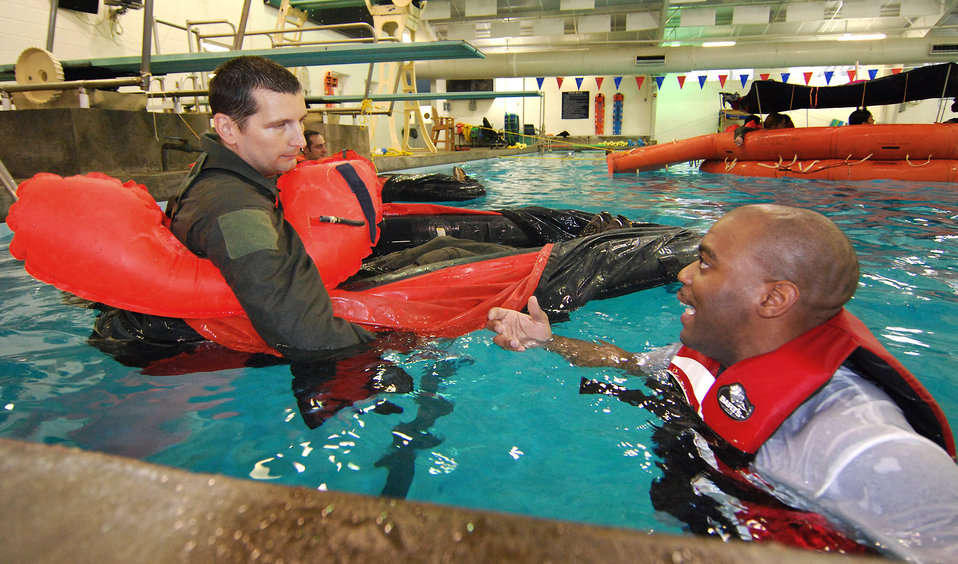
Water survival training

Tech Sgt. Jason Wade (left) receives instruction from Tech Sgt. Preston Caldwell on the use of a one-person life raft during water survival training Feb. 4, 2011, at the Cobb Aquatic Center in Marietta, Ga. Sergeant Wade is an aerospace medical technician. Sergeant Caldwell is an aircrew flight equipment continuation instructor.